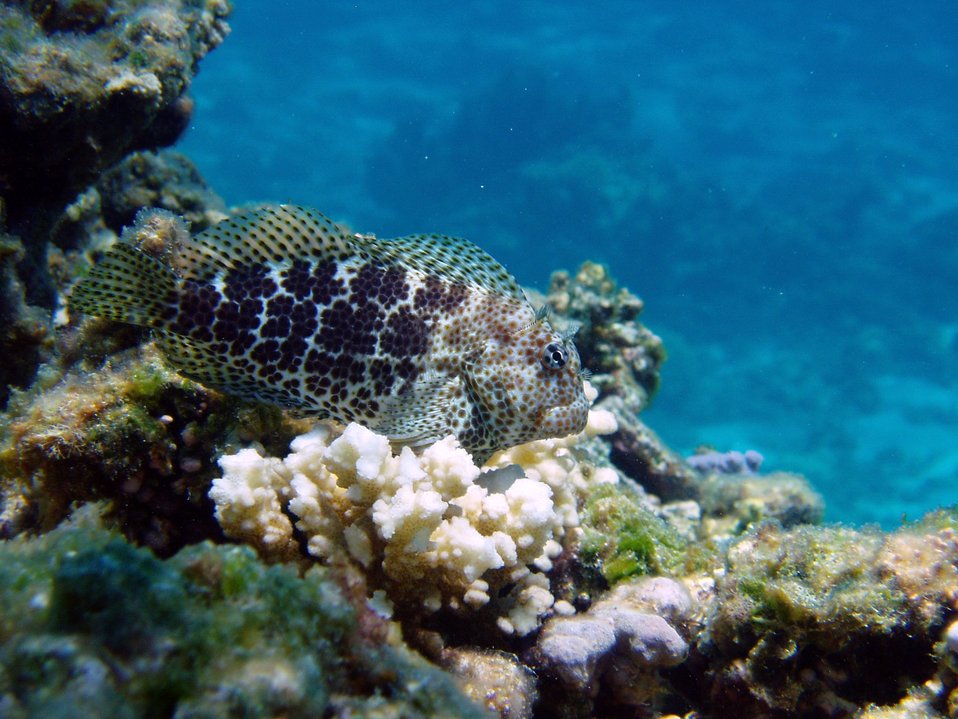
Short-bodied blenny (Exallias brevis) is an obligate corallivore, which feeds on coral.